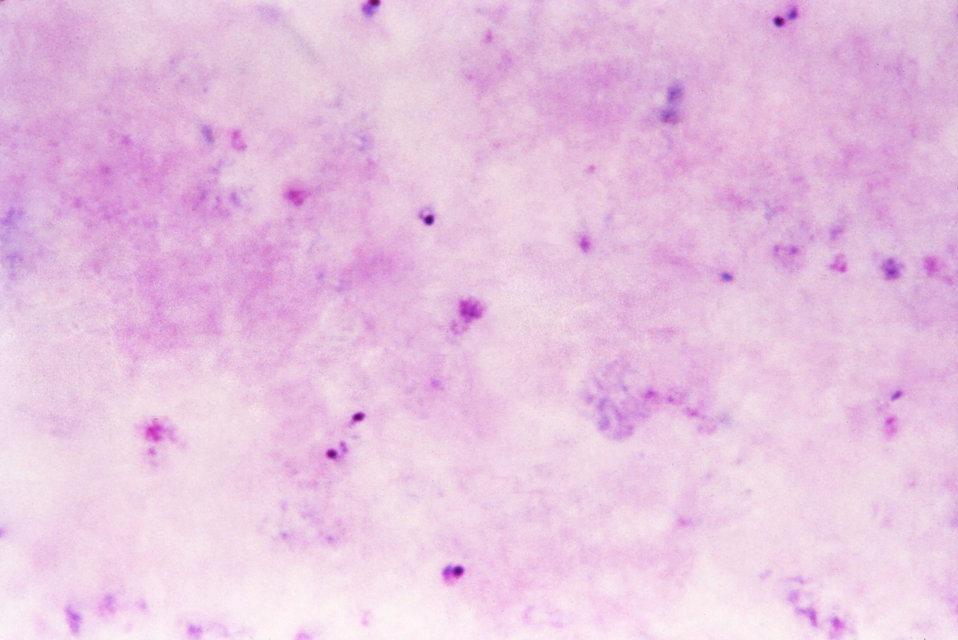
This thick film Giemsa stained micrograph reveals ring-form P. falciparum trophozoites, and abundant cellular debris.